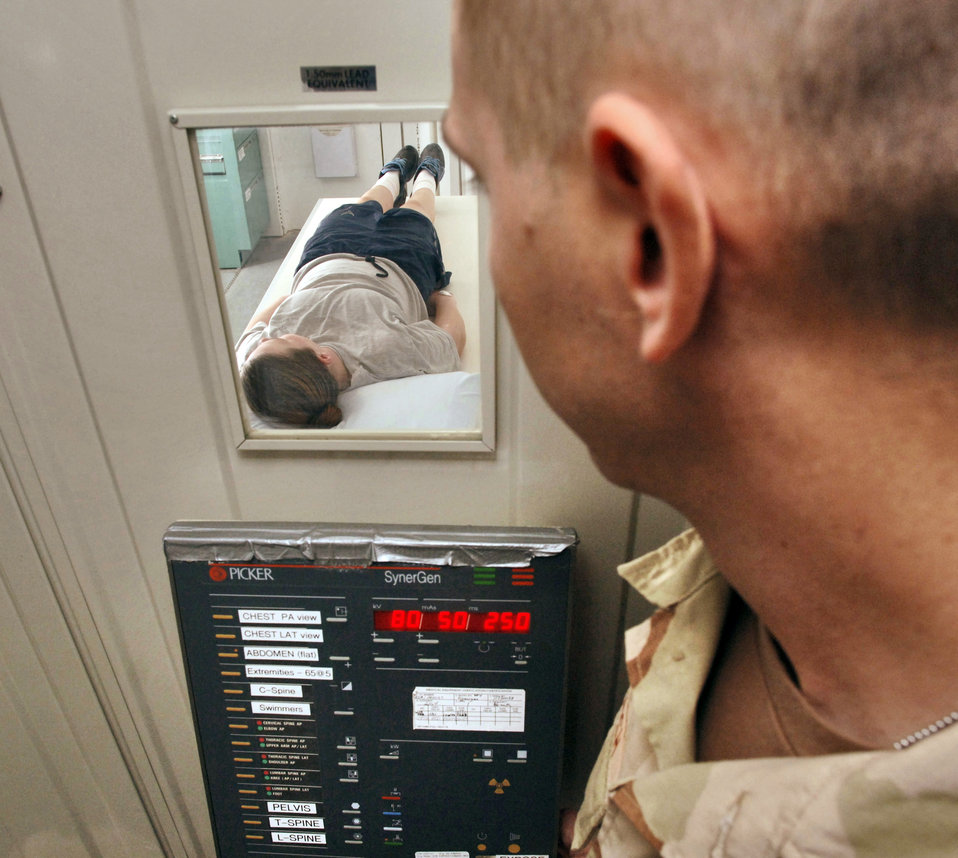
Doctoring downrange

SOUTHWEST ASIA -- Tech. Sgt. Joel Hermesch takes an X-ray of Airman Renee Wyatt at the 379th Expeditionary Medical Group.